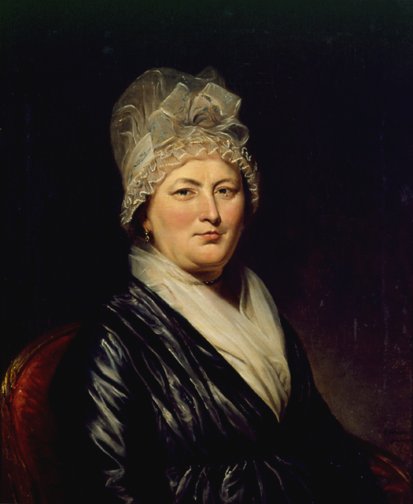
Portrait of Anna de Peyster, oil on canvas painting by Charles Willson Peale, 1798, San Antonio Museum of Art